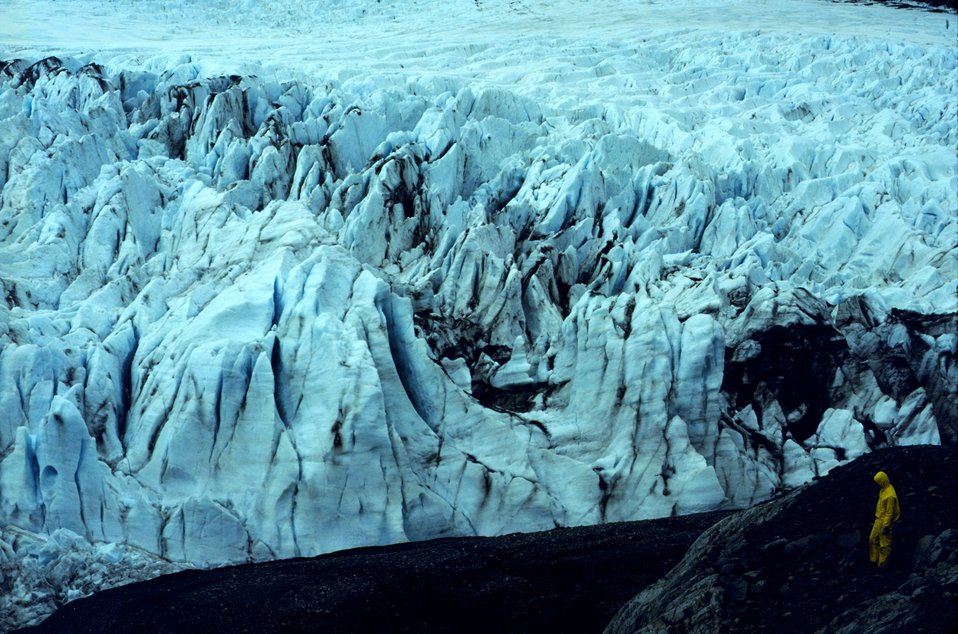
Alaska Glacier